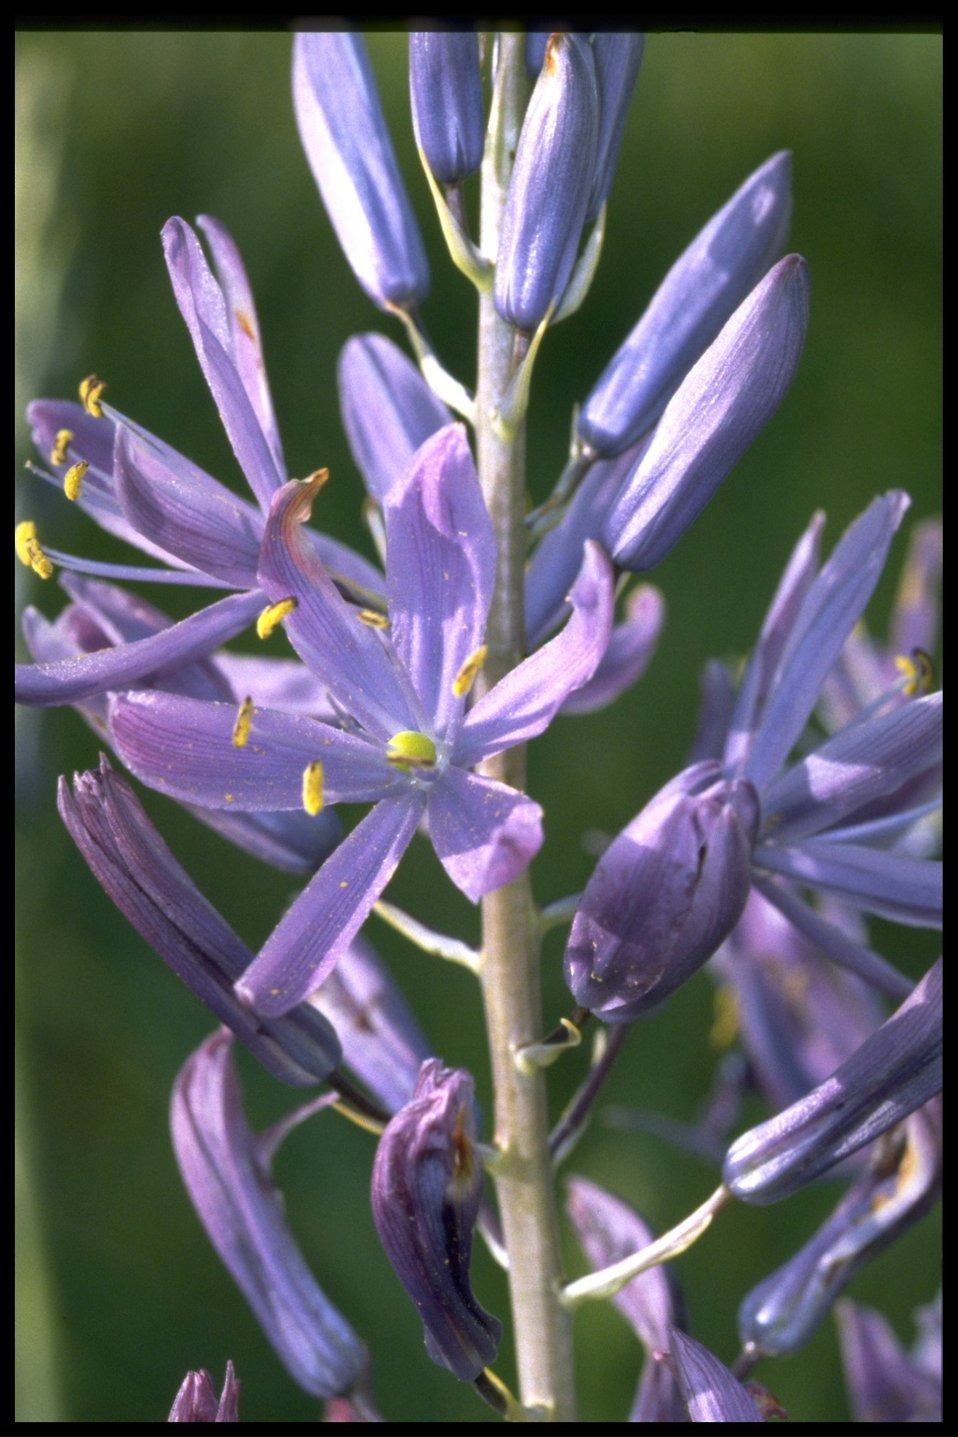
Closeup shot of Camassia quamash.